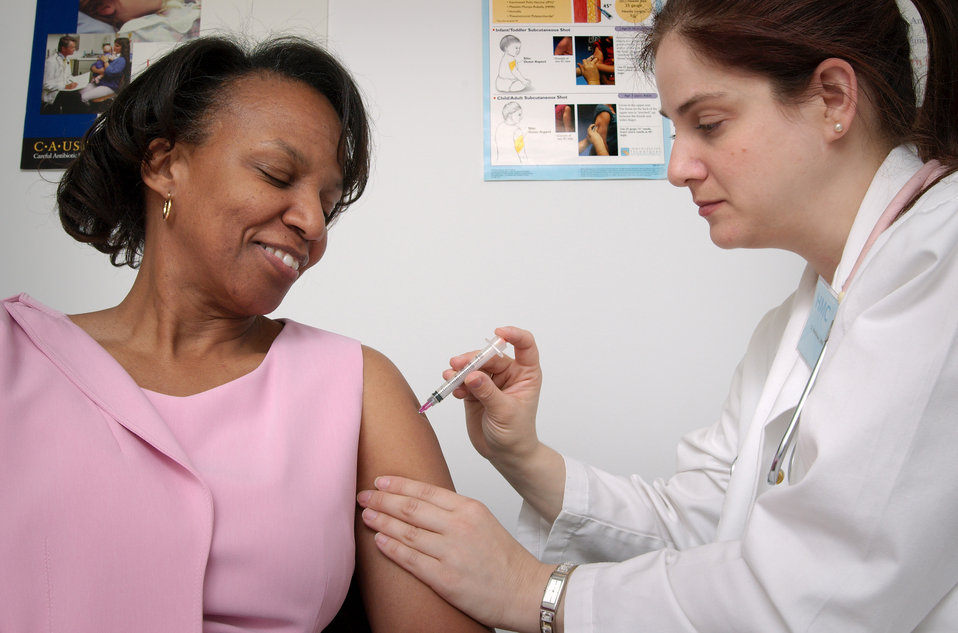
The woman depicted here in this 2006 photograph was shown receiving an intramuscular injection being administered by a qualified nurse. The nurse had chosen the woman's left shoulder muscle as the injection site, and was using her left hand to stabilize the area.